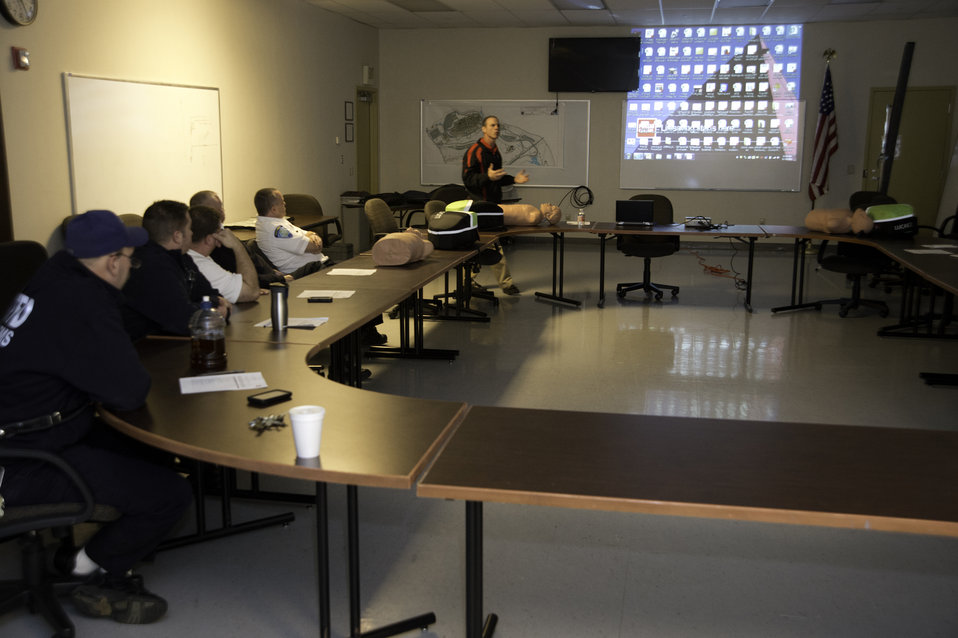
Members of the Mohegan Tribal Fire Department receive training in the life-saving “Lucas II” system for victims of cardiac arrest at the Mohegan Tribe Community Center and Government Building in Uncasville, CT on Nov. 19, 2013. A U.S. Department of Agriculture (USDA) Rural Development (RD) Community Facility Loan was provided to the Mohegan Tribe for the construction of the Mohegan Tribe Community Center and Government Building in Uncasville, CT. USDA’s RD Community Facilities Programs makes and guarantees loans to develop essential community facilities in rural areas and towns of up to 20,000 in population. Loans and guarantees are available to public entities such as municipalities, counties, parishes, boroughs, and special-purpose districts, as well as to non-profit corporations and tribal governments. The 160,000 square foot building Center hosts an exhibit celebrating federal recognition, history of Mohegan Chiefs, a new Library and Archives space, new Arts and Crafts room, a new gymnasium, and a new community room to enjoy food and family. The Center will continue the Tribe’s plan for growth and meeting the needs of its members.